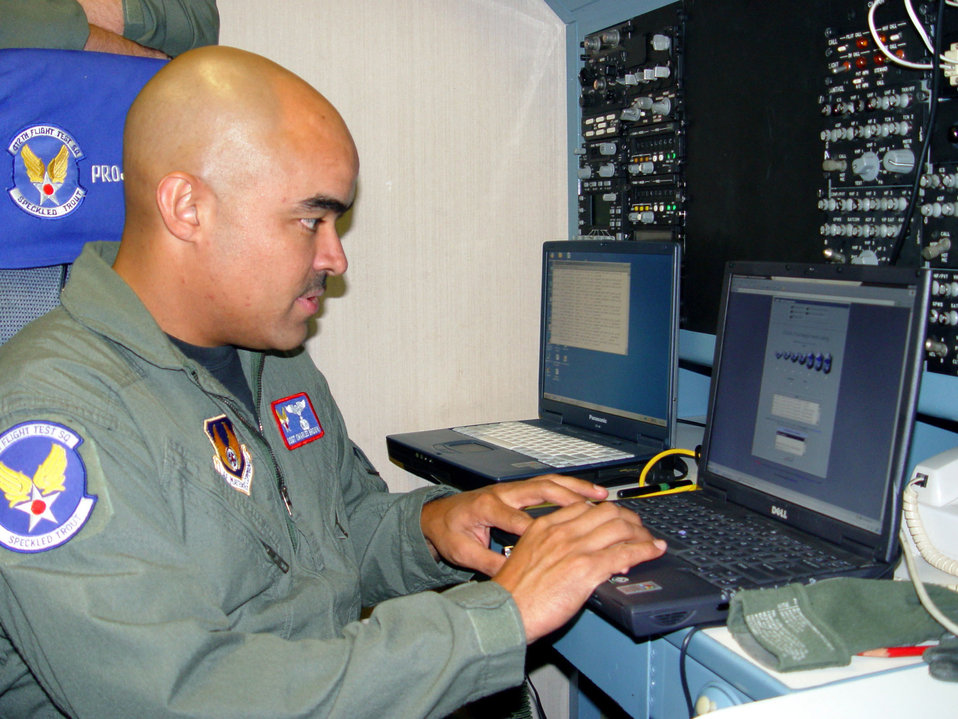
Airborne network takes 'wireless' to new heights

EDWARDS AIR FORCE BASE, Calif. -- Master Sgt. Charles Brown tests the operational use of airborne Internet access during a test flight on a C-135 Speckled Trout. He is assigned to the 412th Flight Test Squadron here.